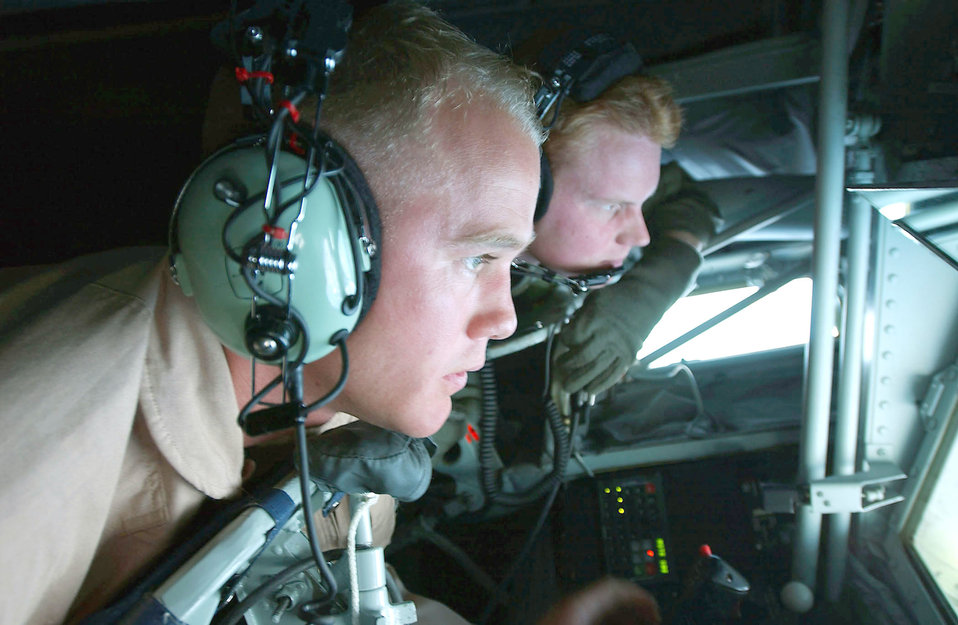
A family affair

OPERATION IRAQI FREEDOM -- First Lt. Eric Adcock (right), a KC-135 Stratotanker co-pilot, watches as Airman 1st Class Kenny Harwood, boom operator, refuels an E-8C Joint Stars aircraft. Adcock's older brother, 1st Lt. Nick Adcock, was the pilot of the E-8C being refueled.